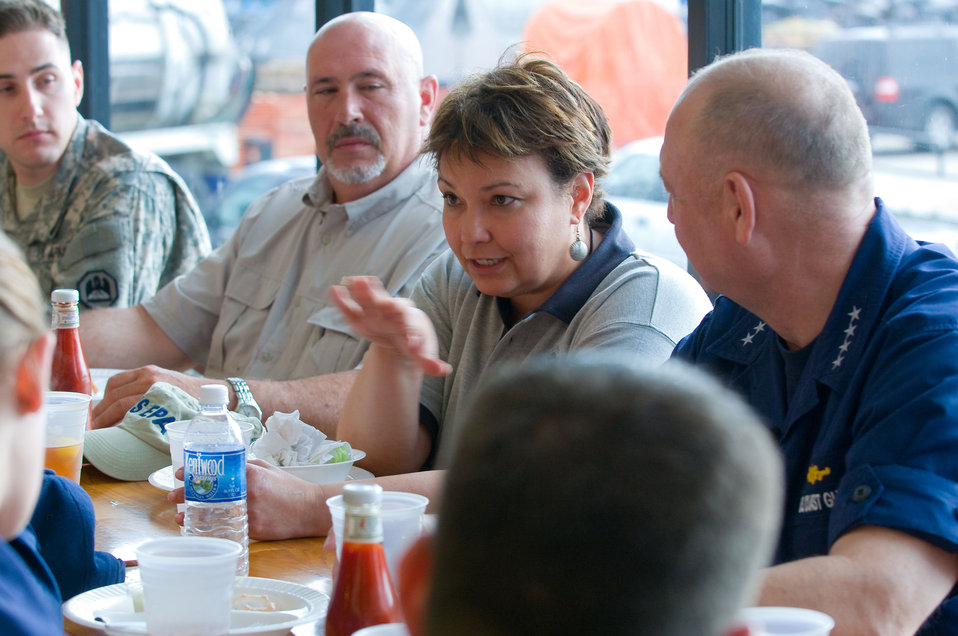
June 2, EPA Administrator Jackson explains EPA efforts underway in response to the BP Spill.

EPA Administrator Lisa Jackson, National Incident Commander Admiral Thad Allen speak with troops deployed to the Gulf Coast.